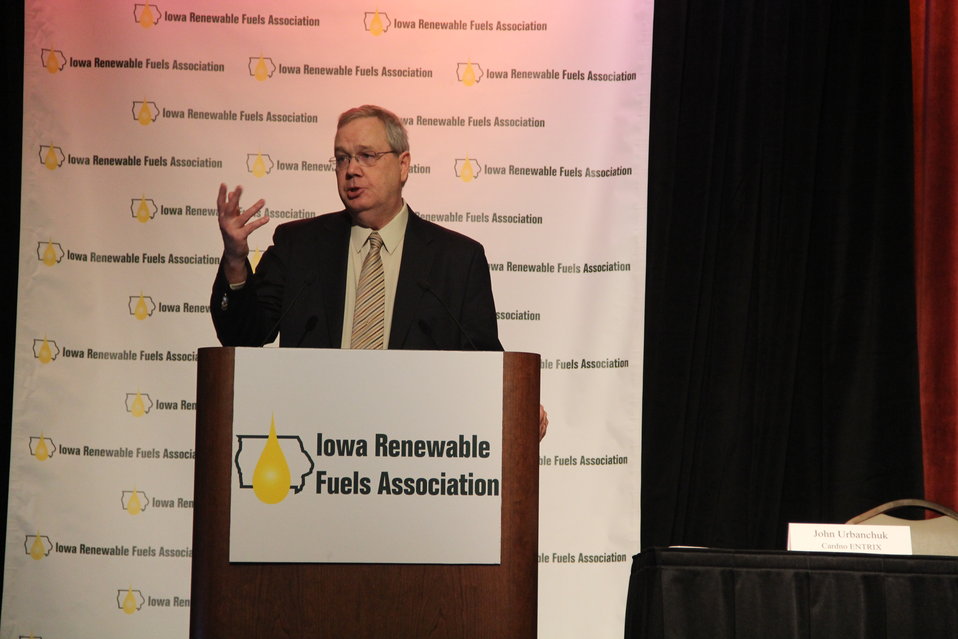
Dallas Jan 30 IA Fuels Summit 7

U.S. Department of Agriculture (USDA) Under Secretary for Rural Development (RD) Dallas Tonsager describes Secretary Vilsack’s “All of the Above” energy strategy during the Iowa Renewable Fuels Summit in Altoona, IA on Jan. 30, 2013.